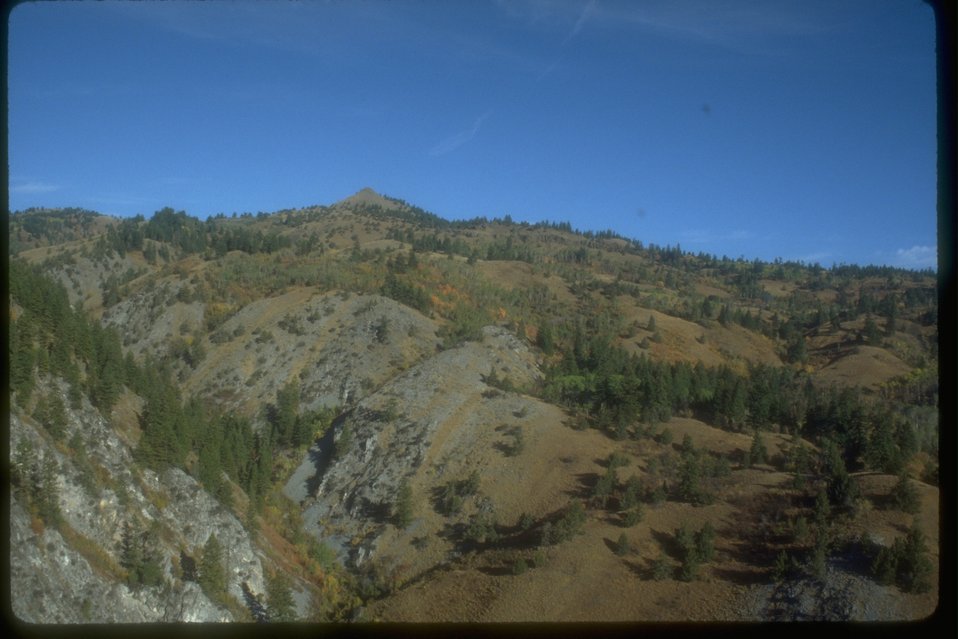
Looking up at Lookout Mountain.